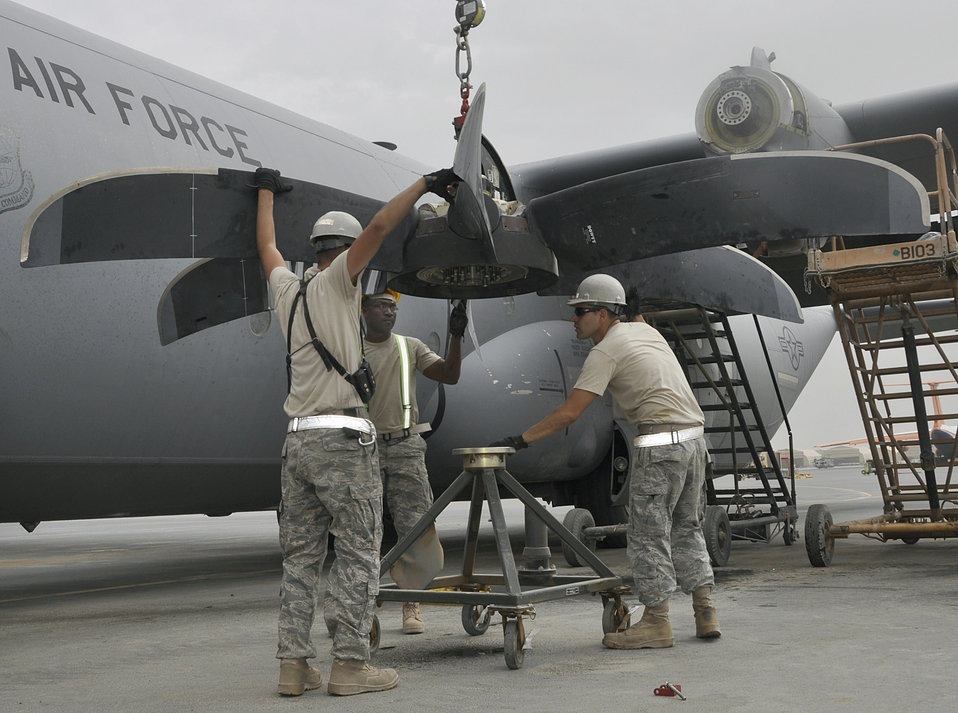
Maintainers keep heart of Air Force pumping

Members of the 451st Expeditionary Aircraft Maintenance Squadron remove a damaged propeller from a C-130J Hercules aircraft Aug. 8, 2010, at Kandahar Airfield, Afghanistan.